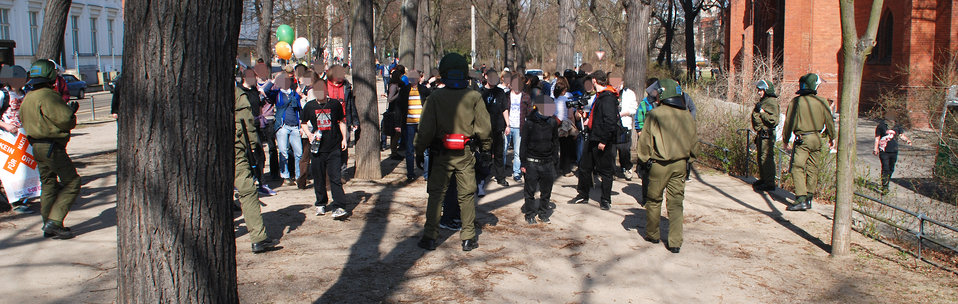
Proteste gegen den Nazi-Aufmarsch am 24.3.2012 in Frankfurt (Oder)